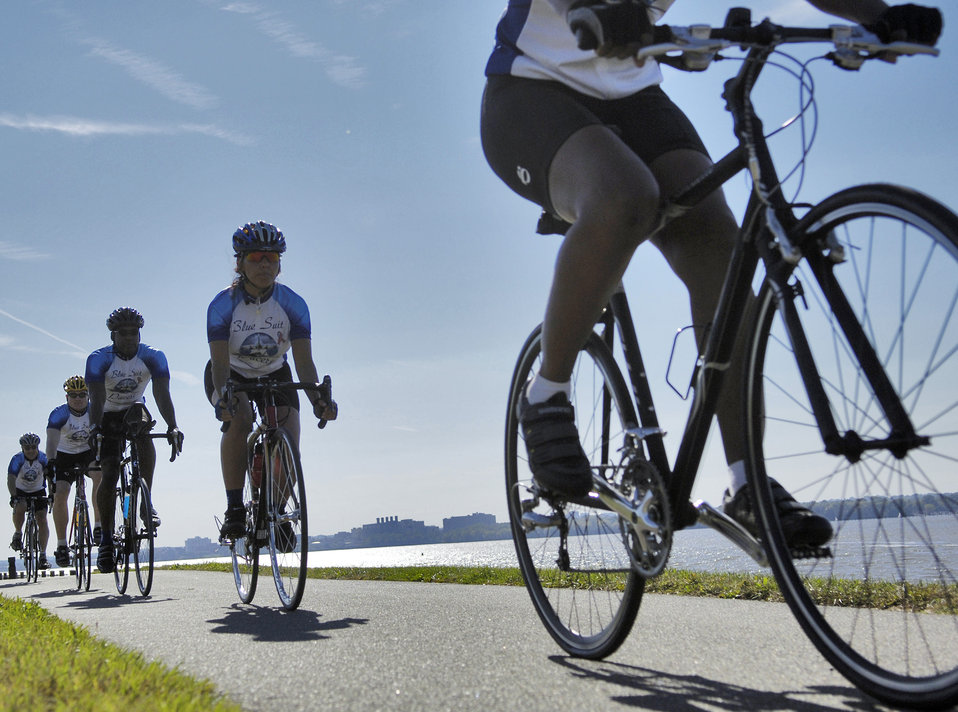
Riding for a cause

BOLLING AIR FORCE BASE, D.C. -- Blue Suit Pacers cyclists go for a training ride around this historic base. The group -- riding here Oct. 19 -- has about 30 Airmen and other government workers from the D.C. area.